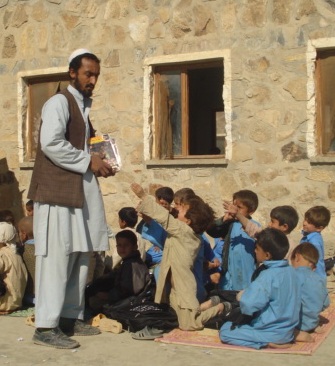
Nangarhar school